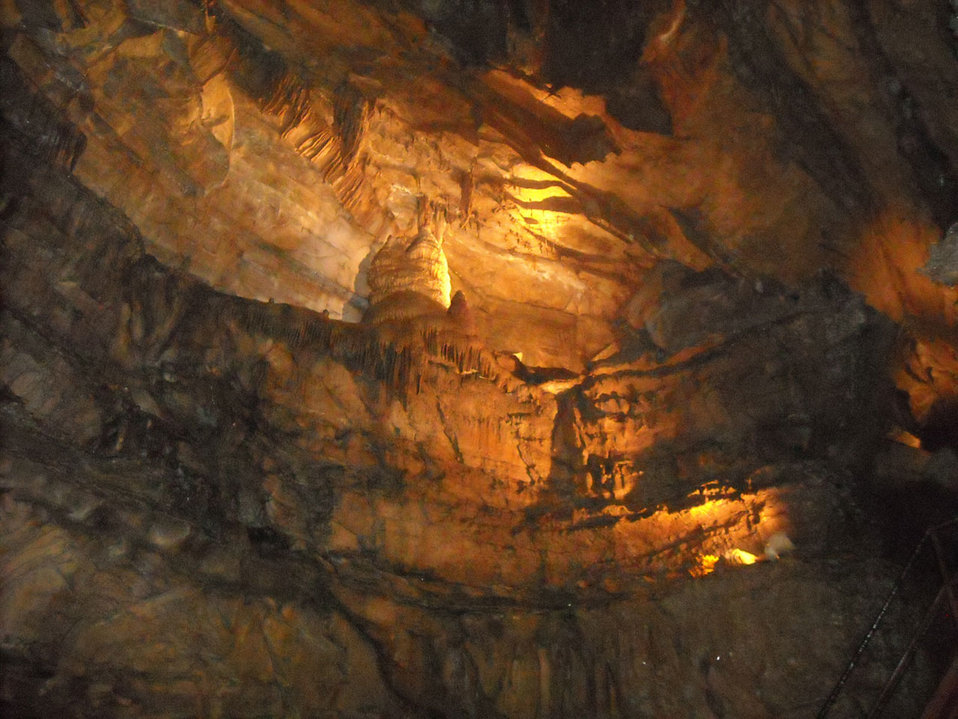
Caves in indiana.